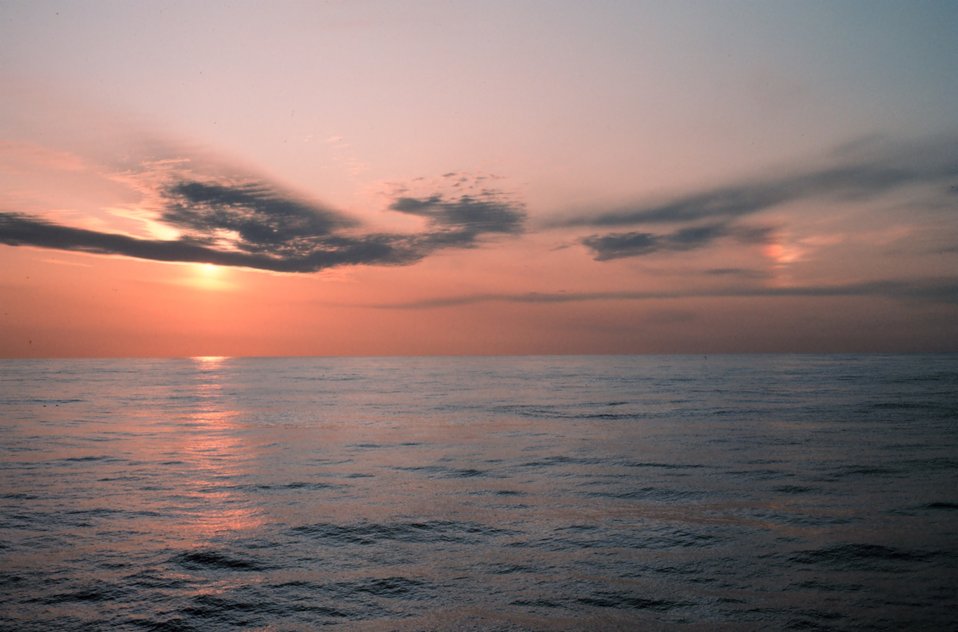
A setting sun over the ocean with a sundog to the right.